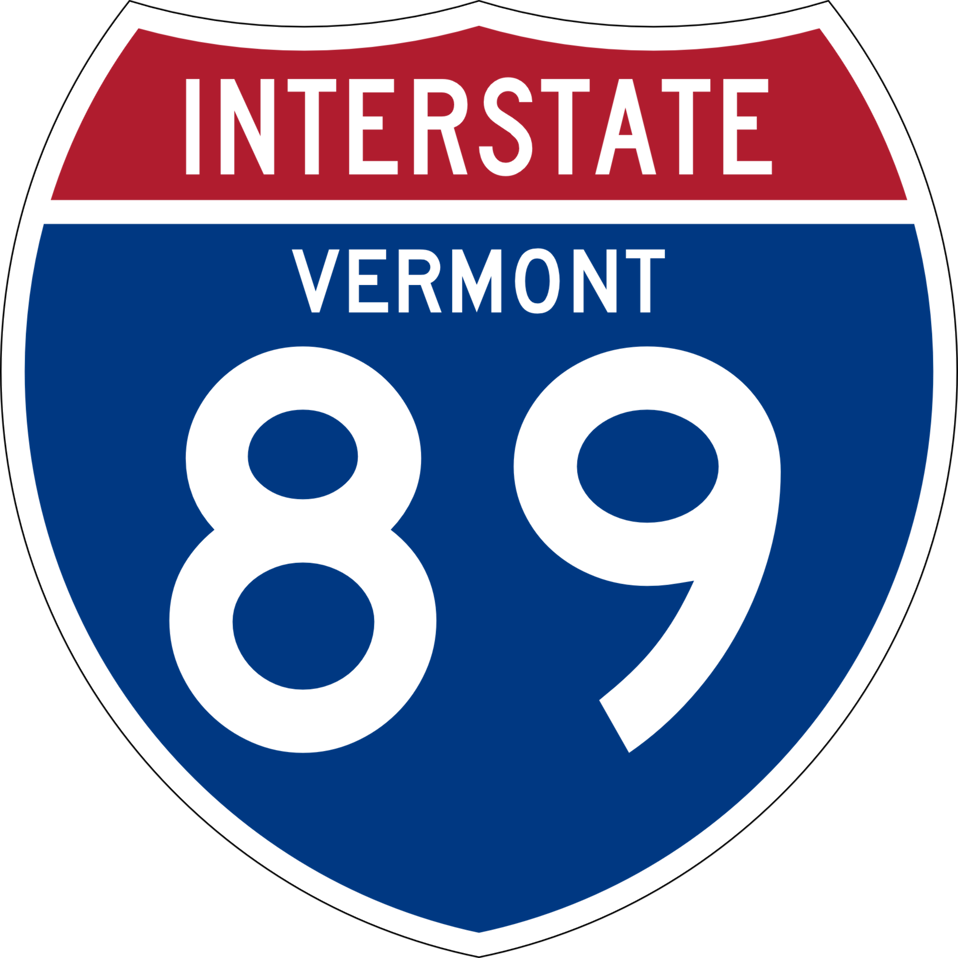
I-89 shield with Vermont state name in the shield.